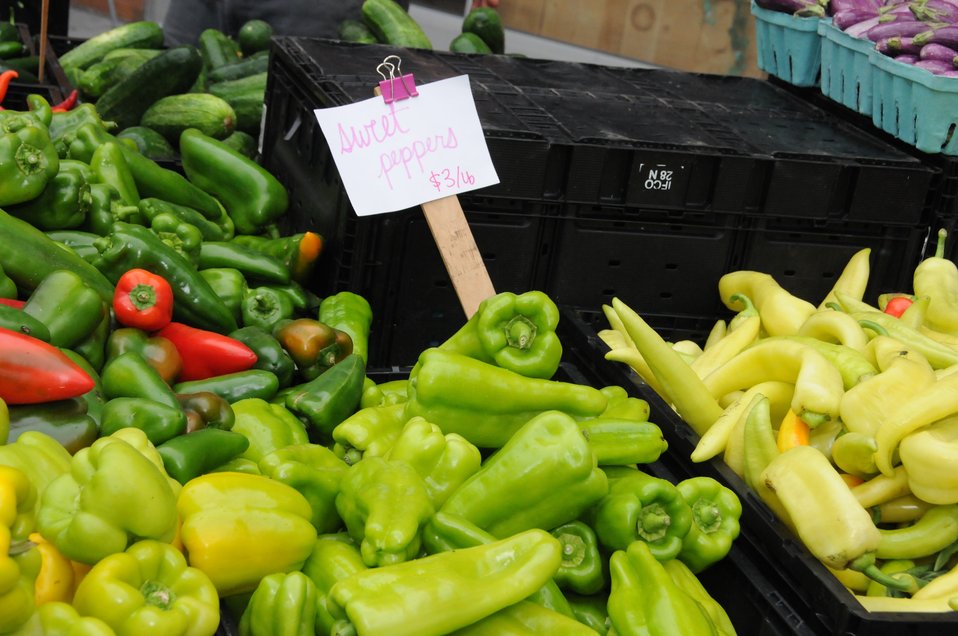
Sweet peppers sold at the Columbia Heights Community Marketplace.